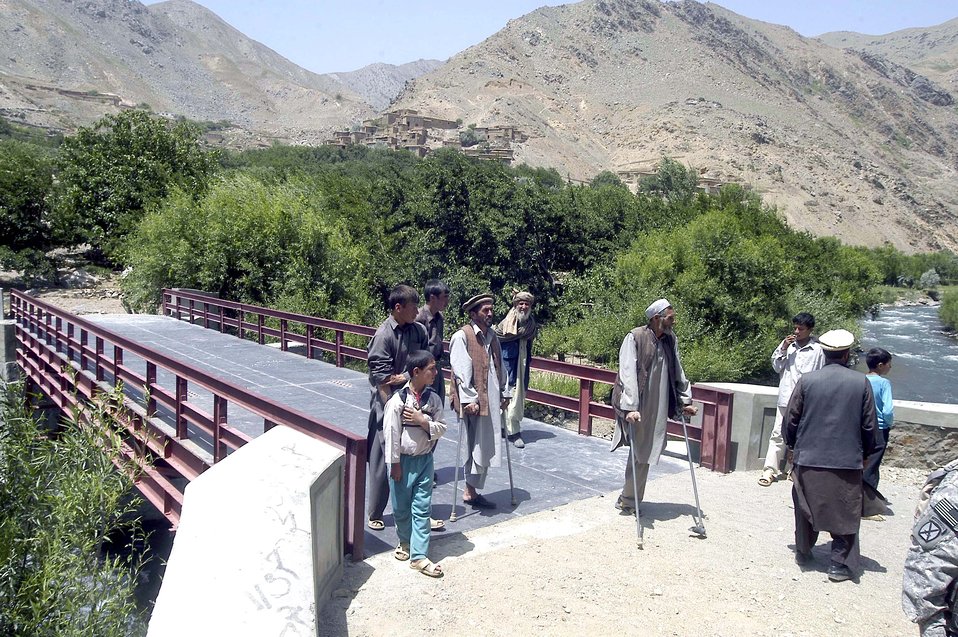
U.S., Parwan governments build 'bridge to future'

Two Afghan men on crutches cross a newly constructed bridge linking the village of Nawaj and other mountain villages to a main road in the Parwan Province of Afghanistan. The bridge, an initiative of the Parwan government and supported by the U.S. military's Bagram Provincial Reconstruction Team, is the first step in a transportation and flood control project for the Parwan area.